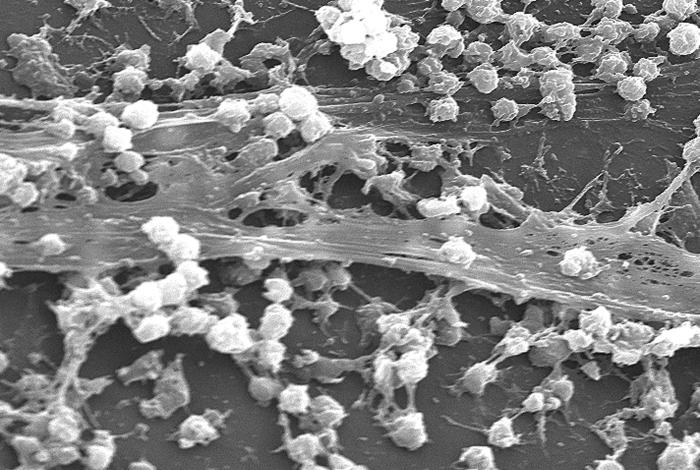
This electron micrograph depicted large numbers of Staphylococcus aureus bacteria, which were fond on the luminal surface of an indwelling catheter. Of importance is the sticky-looking substance woven between the round cocci bacteria, which was composed of polysaccharides, and is known as 'biofilm'. This biofilm has been found to protect the bacteria that secrete the substance from attacks by antimicrobial agents such as antibiotics; Magnified 2363x.S. aureus, often referred to simply as "staph," are bacteria commonly carried on the skin, or in the nose of healthy people. Approximately 25% to 30% of the population is colonized, i.e., when bacteria are present, but not causing an infection, in the nose with staph bacteria.